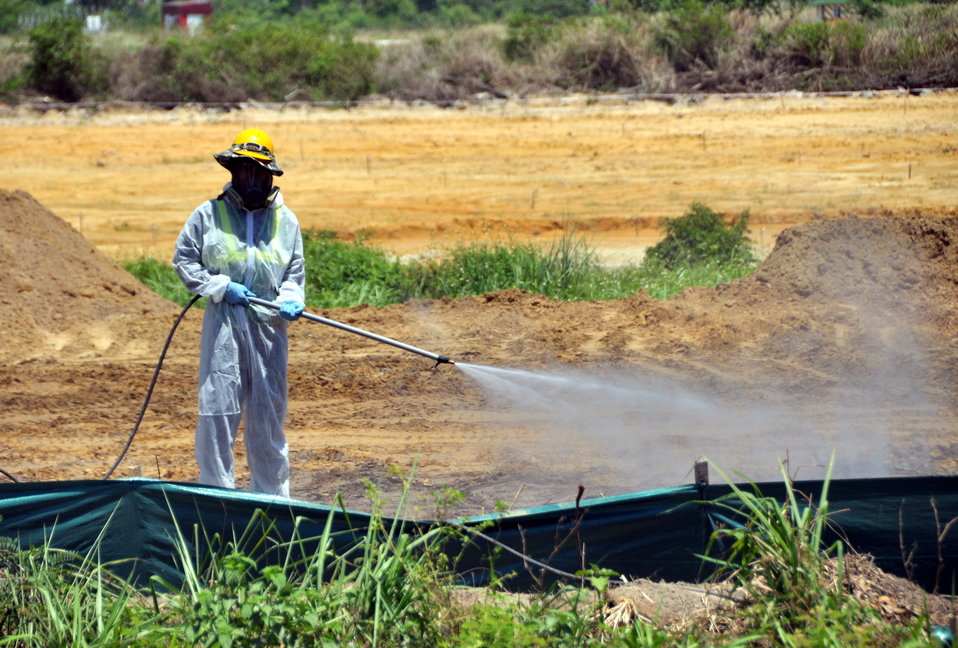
Environmental Remediation Progress at the Danang Airport site

Progress at the Remediation of Dioxin Contamination Project Site

Danang, Vietnam, June 5, 2013